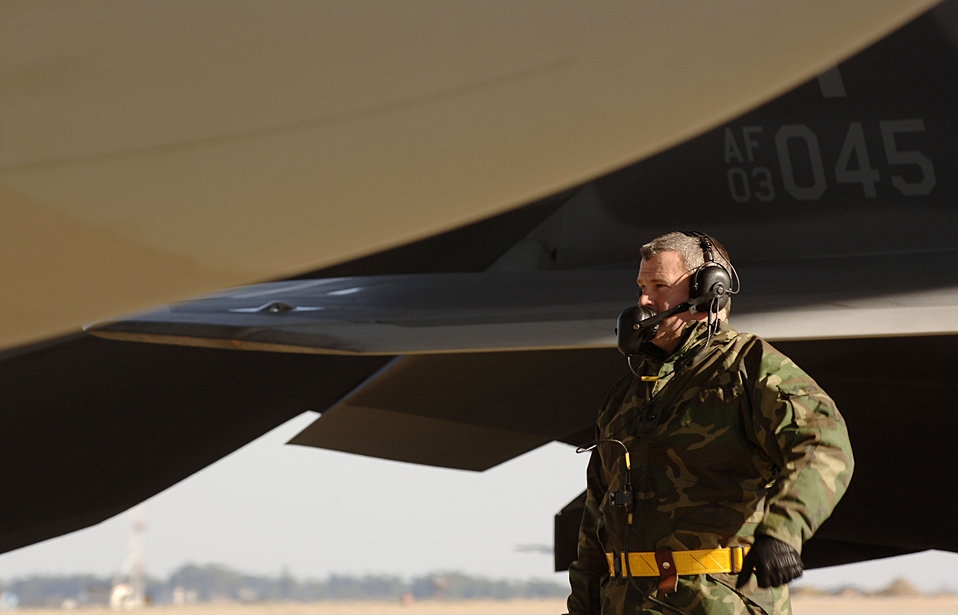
Raptors head to Red Flag

Staff Sgt Tom Mills goes through a series of aircraft checks with Maj. Patrick Deconcini Feb. 3 at Langley Air Force Base in Virginia.The 94th Fighter Squadron is deploying for Red Flag at Nellis AFB, Nev. Red Flag is an air combat training exercise designed to test pilots and air support crews' ability to affectively respond to real-world combat scenarios. This is the first deployment to Red Flag for the 94th FS with F-22s. Sergeant Mills is a crew chief with 192nd Virginia Air National Guard assigned to the 94th Aircraft Maintanence Unit. Major Deconcini is a 192nd Virginia Air National Guard pilot with the 94th Fighter Squadron.